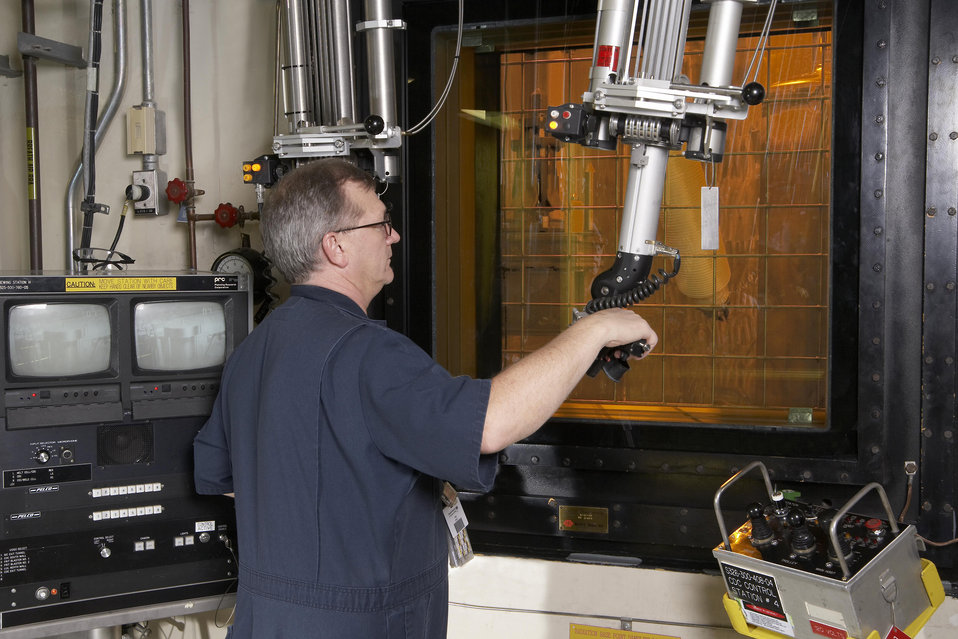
Site Marks Waste Processing Milestone with Melter’s 2,000th Waste Canister

A Savannah River Remediation employee uses a manipulator located inside a shielded enclosure at the Defense Waste Processing Facility, where a melter pours molten glass into a canister.

The melter at Savannah River Site’s (SRS) Defense Waste Processing Facility (DWPF) is a 65-ton refractory-lined melting vessel that receives a chemically-balanced feed of treated high-level waste from the site’s underground waste tanks. A mixture known as borosilicate frit is used to remove contamination. When heated, these elements form a molten glass. The solid glass-formed waste is then poured into stainless-steel canisters, which are safely stored onsite until they can be placed in permanent storage.